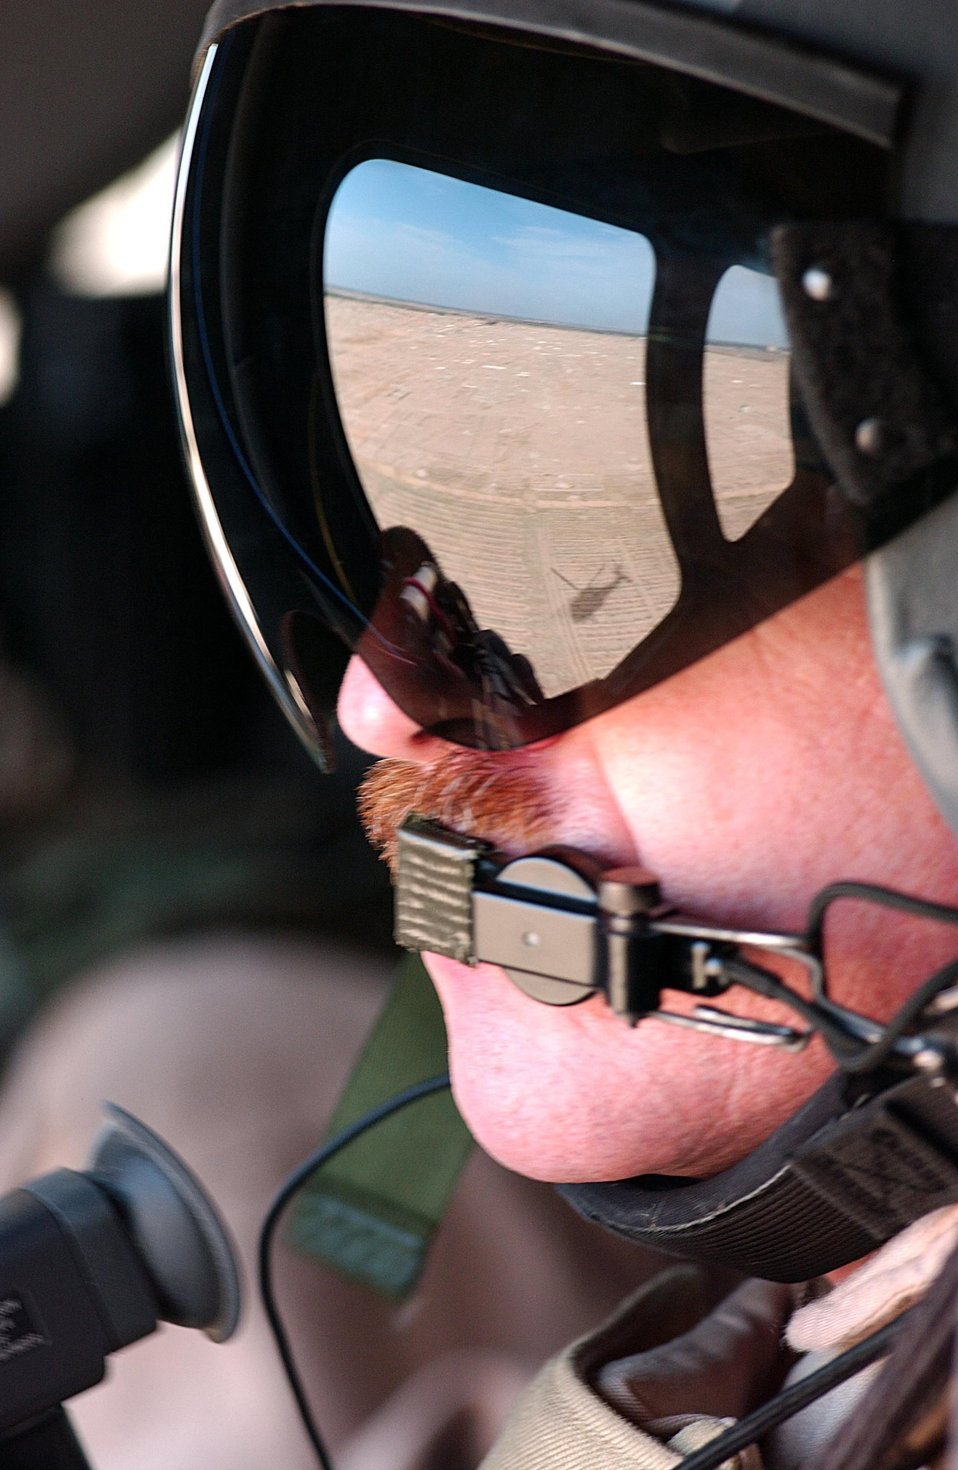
Eyeing the mission

OVER IRAQ -- Senior Master Sgt. Dennis Martin rides in an Army UH-60 Blackhawk to document Ashura in Iraq on Feb. 19. Ashura, the 10th day of Moharram, is when thousands gather to mourn the killing 13 centuries ago of Imam Hussein, the grandson of Prophet Mohammed. Ashura is the holiest day in the Shiite calendar. This is the second year for this event here because former president Saddam Hussein had not allowed Shias to participate for more than 30 years. Sergeant Martin is a videographer from the 4th Combat Camera Squadron.